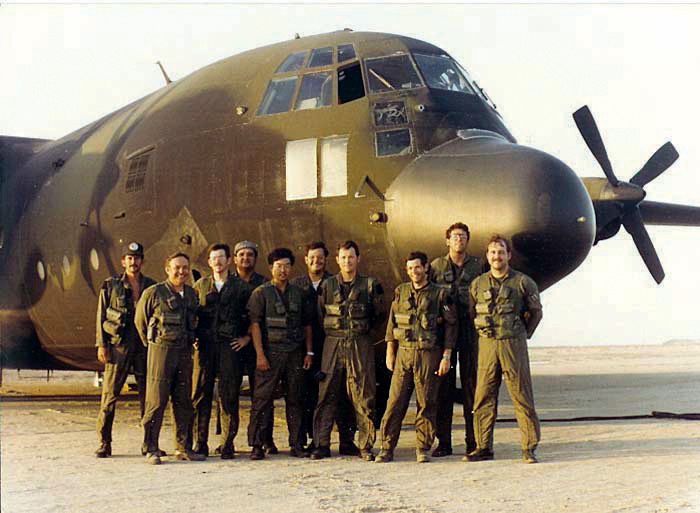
Reflecting back

FILE PHOTO -- Then-Capt. Michael Sumida poses with the crew of the attempted rescue mission of 66 American hostages from Iranian militants.